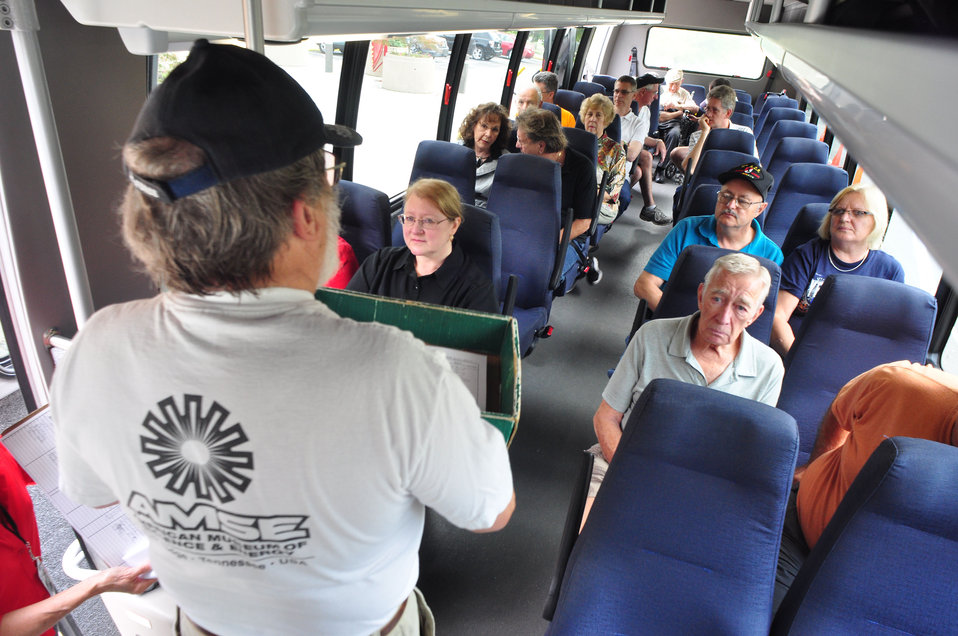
DOE Public Bus Tour 2012 Oak Ridge

12-138 DOE photo Lynn Freeny 8-30-2012 Oak Ridge Tennessee